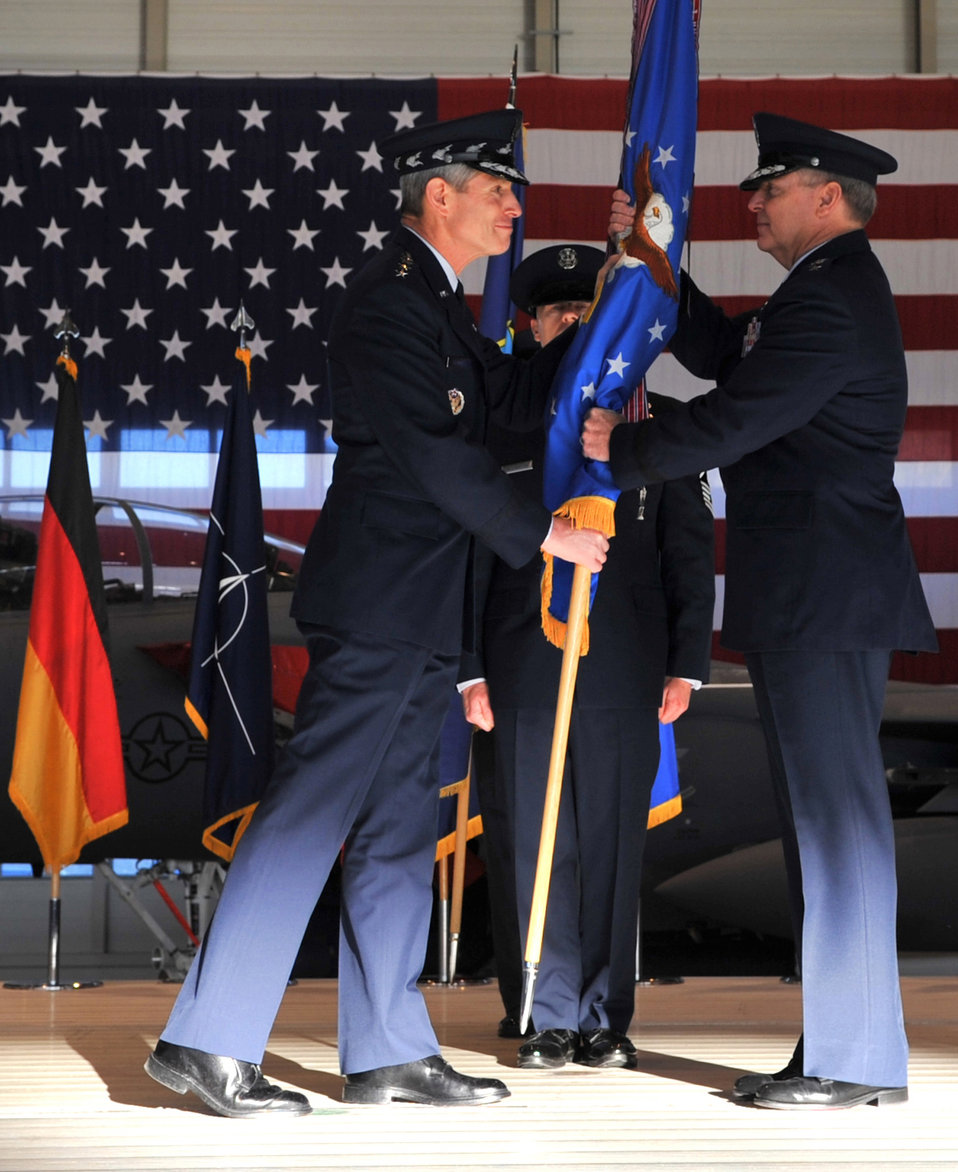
Gen. Mark A. Welsh III takes command of USAFE

Air Force Chief of Staff Gen. Norton Schwartz gives Gen. Mark A. Welsh III, the command of U.S. Air Forces in Europe during a change of command ceremony, Ramstein Air Base, Germany, Dec. 13, 2010. Gen. Roger A. Brady, outgoing USAFE commander, relinquished command during the change of command ceremony after providing command and control for air, space and missile defense for activities in an area of operations covering almost one-fifth of the globe which included 51 countries in Europe, Asia, the Middle East, and the Arctic and Atlantic oceans.